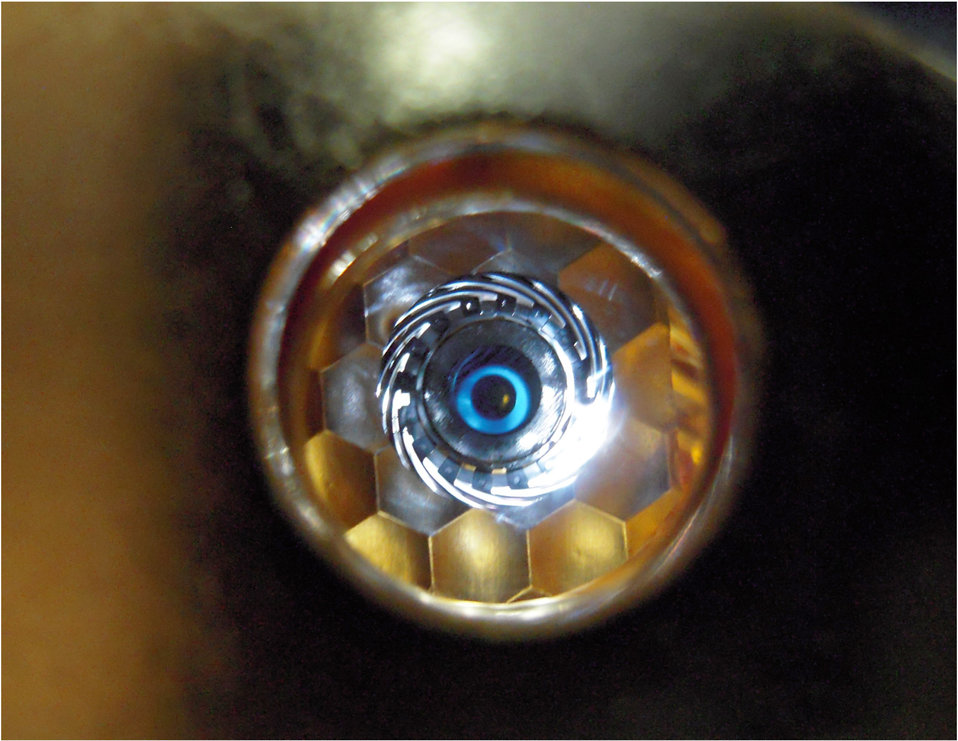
At Lawrence Livermore National Laboratory, a view of the cryogenically cooled National Ignition Facility target as seen by the laser through the Hohlraum's laser entrance hole.
The National Ignition Facility at LLNL enables key programs and technologies that support DOE's National Nuclear Security Administration Defense Programs and LLNL missions, ensuring that the national's weapons remain safe, secure and reliable. NIF, one of the cornerstones of DOE's stockpile stewardship program, will integrate the inertial confinement fusion program into the overall stockpile stewardship program and foster the development of associated laser technologies.